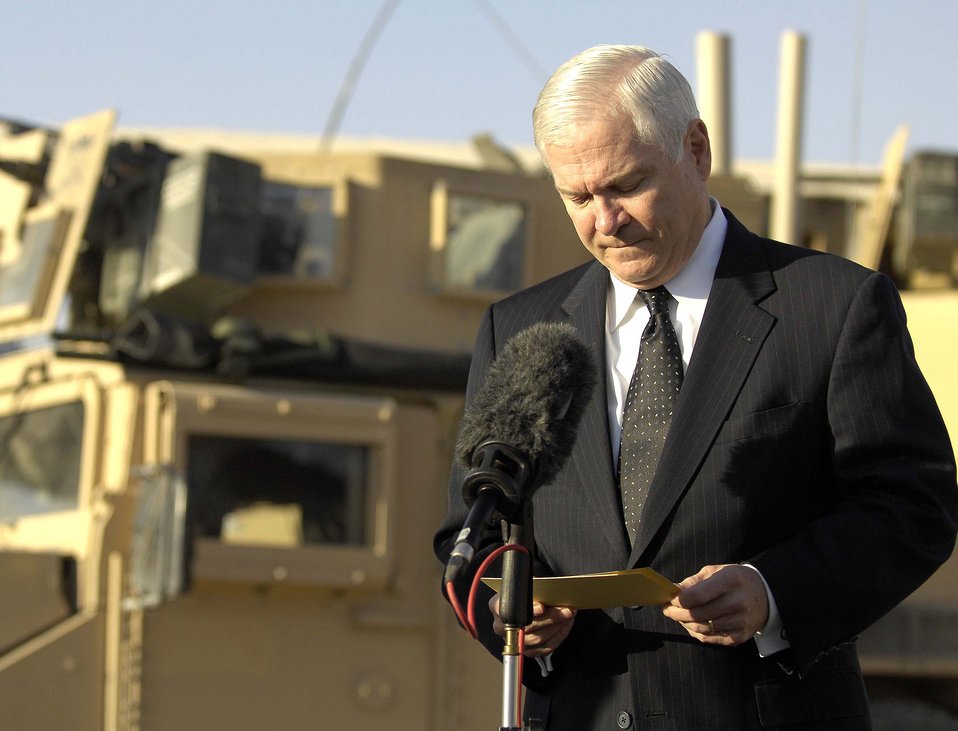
Secretary Gates looks over notes as he speaks with press in Afghanistan

Secretary of Defense Robert M. Gates looks over his notes as he talks with members of the press on Kandahar Air Field, Afghanistan, Dec. 11, 2008. Secretary Gates addressed more than 300 Airmen and Soldiers Dec. 11, 2009 at Kirkuk Regional Air Base, Iraq.